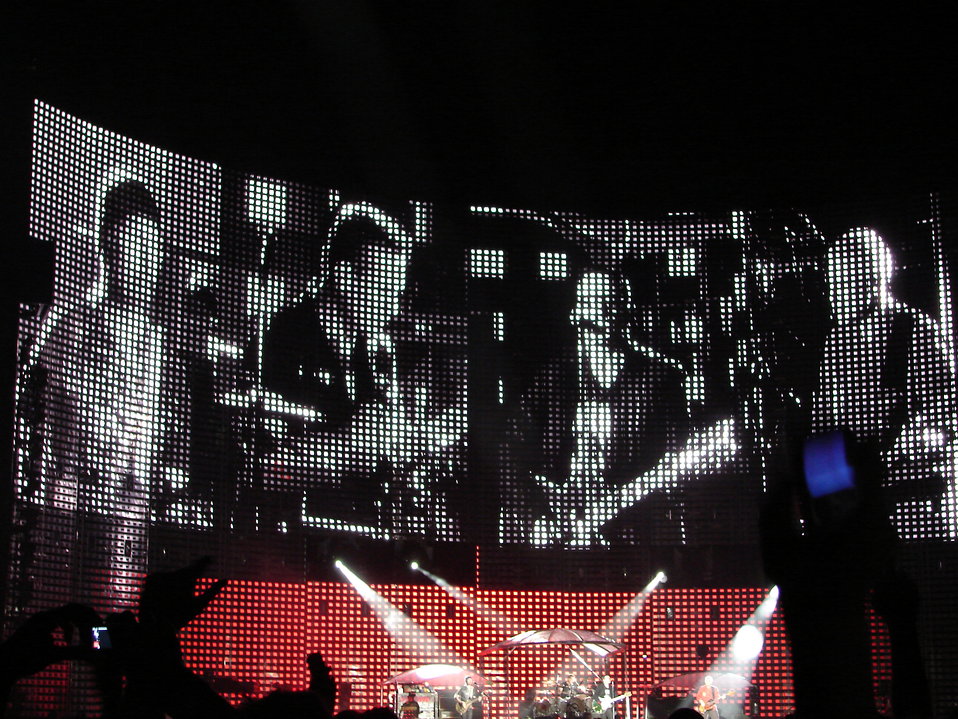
Photograph taken at Telstra Stadium, Sydney, during U2's performance of One. The stage was designed by Willie Williams.